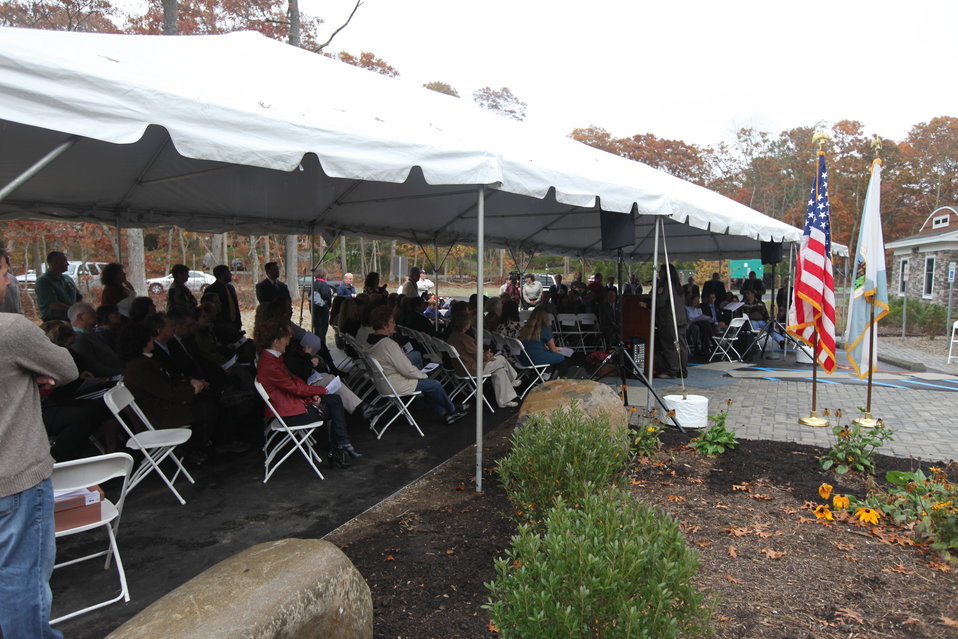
Crowd in tent

Rainy day, but the tent helped keep folks dry for the ceremony!